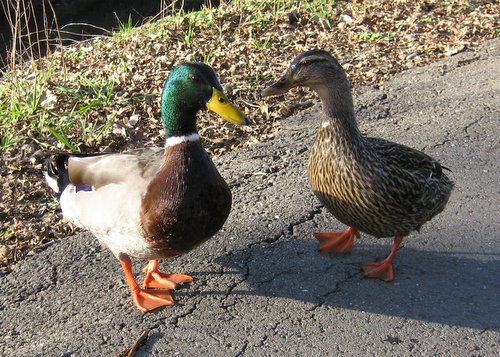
Two ducks, i took at the pond near my house